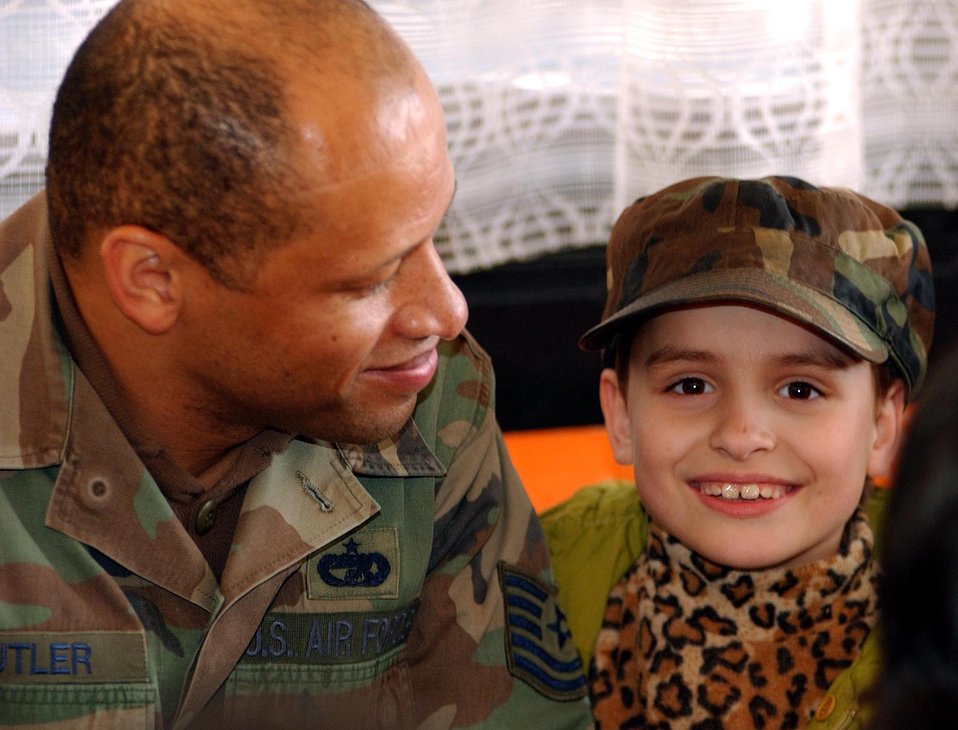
You've got a friend

OPERATION IRAQI FREEDOM -- Tech. Sgt. Terrance Butler shares his hat with a Bulgarian child April 2. Butler is currently assigned to the 409th Air Expeditionary Group at Camp Sarafovo, Bulgaria. More than 40 children from two orphanages in nearby Burgas toured the camp and entertained the deployed troops.